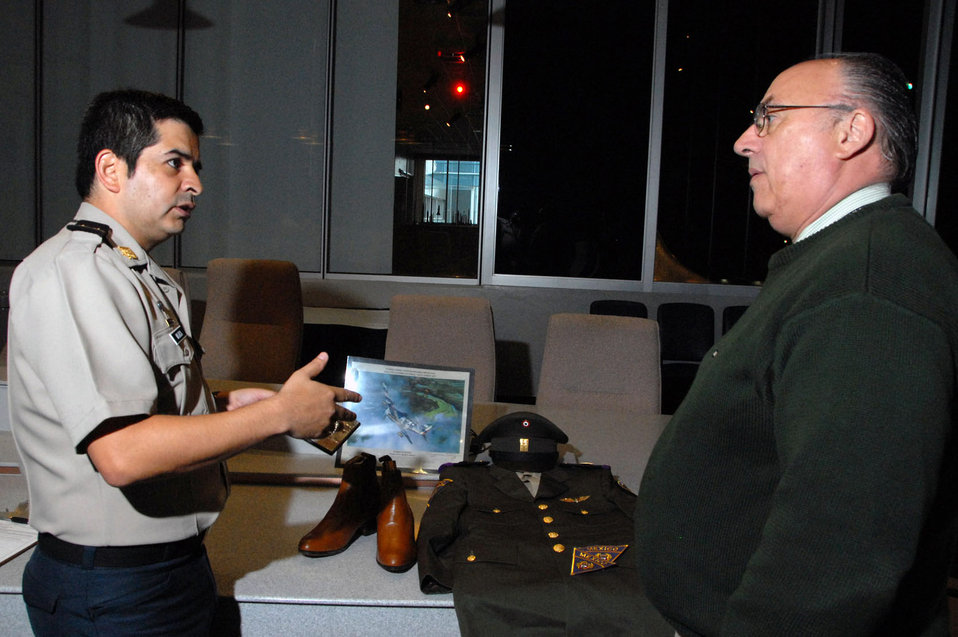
Museum receives artifact donation from Mexican air force

Mexican air force Lt. Col. Daniel Mojica gives information about some of the artifacts to Terry Aitken during a donation ceremony of Mexican air force items from World War II April 29 at the National Museum of the U.S. Air Force in Dayton, Ohio. Mr. Aitken is the senior curator for the museum.